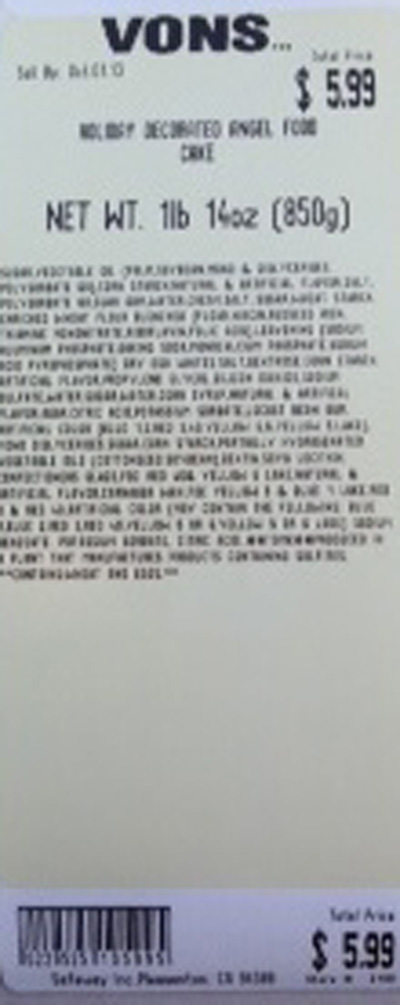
RECALLED – Angel Food Cakes

September 26, 2013 – Product Recall – Safeway Recalls Several Varieties of Angel Food Cake Due to Undeclared Soy and Milk Allergens.